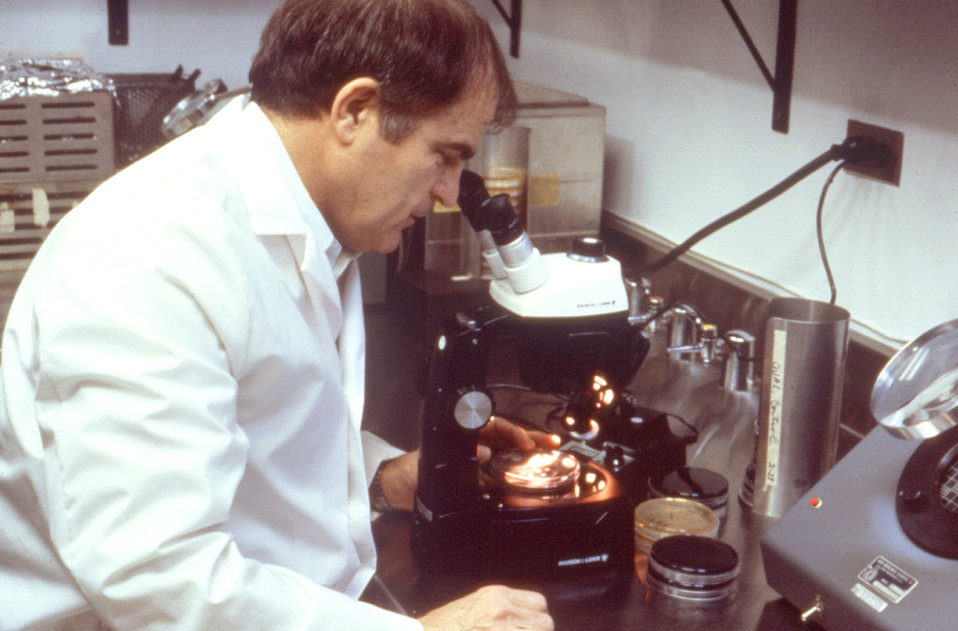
This microbiologist is examining media for the presence of colonies of Legionella sp. under a dissecting microscope.